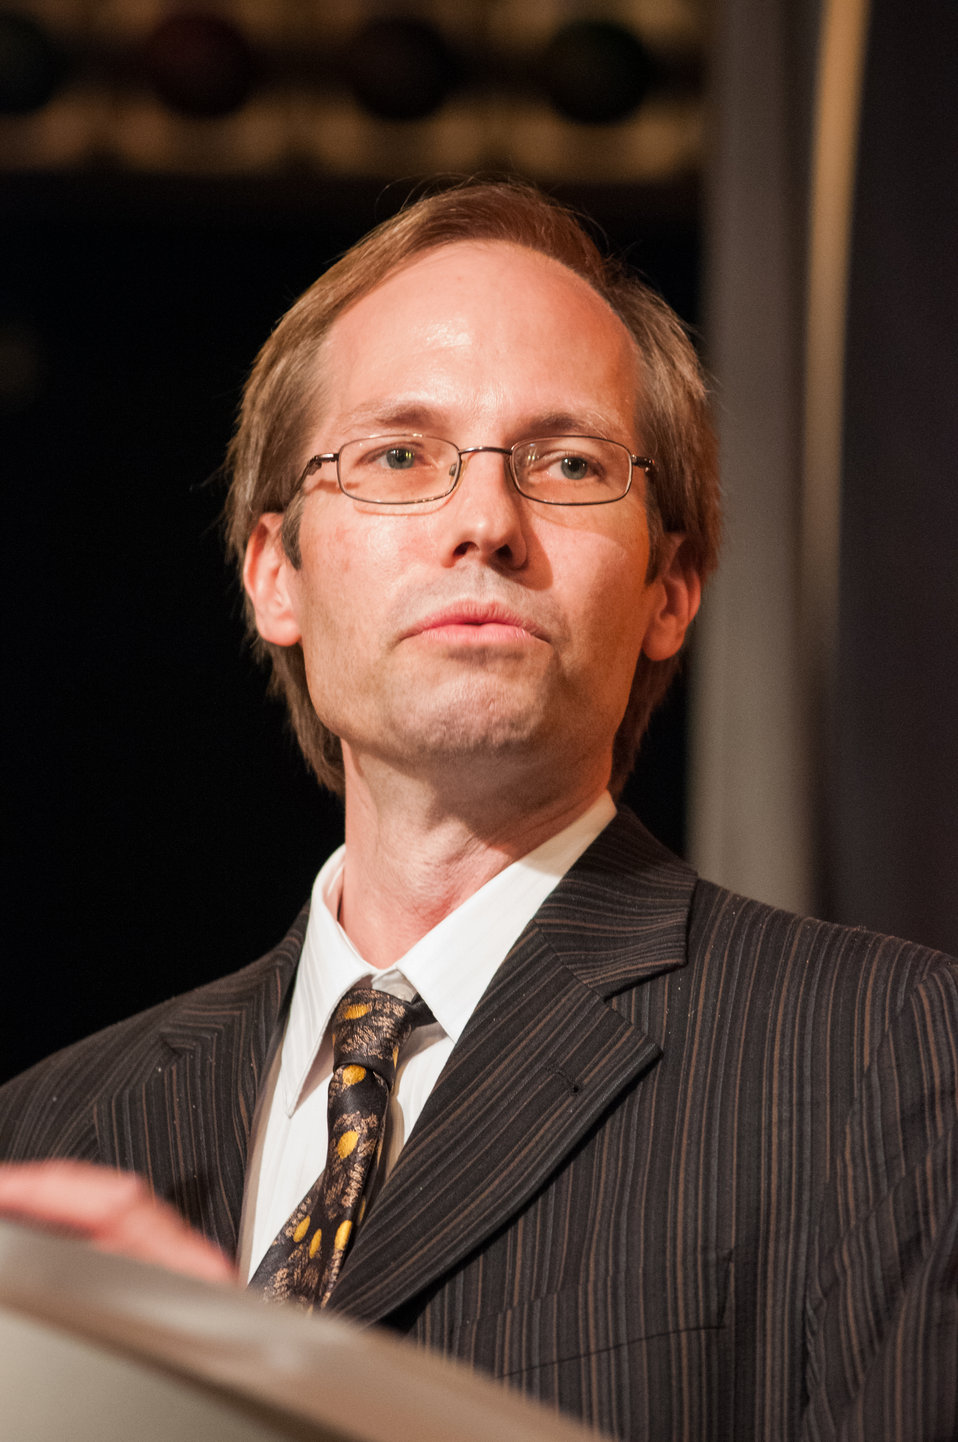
U.S. Department of Agriculture (USDA) Agricultural Research Service (ARS) research geneticist and an Adjunct Professor of Plant Breeding and Genetics at Cornell University Edward Buckler discusses plant genomics during the, “Delivering on the Value of Agricultural Open Data Globally Leveraging the Value of Scientific Open Data from the Research Laboratory to the Field” panel at the G-8 International Conference on Open Data for Agriculture in Washington, D.C. on Tuesday, Apr. 30, 2013. The conference launched a new 'virtual community' of Food, Agriculture, and Rural data on Data.gov-the U.S. Government's data sharing website-to catalogue America's publicly available agricultural data and increase the ability of the public to find, download, and use datasets that are generated and held by the Federal Government. The data community features a collection of more than 300 newly cataloged datasets, databases, and raw data sources related to food, agriculture, and rural issues from agencies across the U.S. Government. In addition to the data catalog, the virtual community shares a number of applications, maps and tools designed to help farmers, scientists and policymakers improve global food security and nutrition.